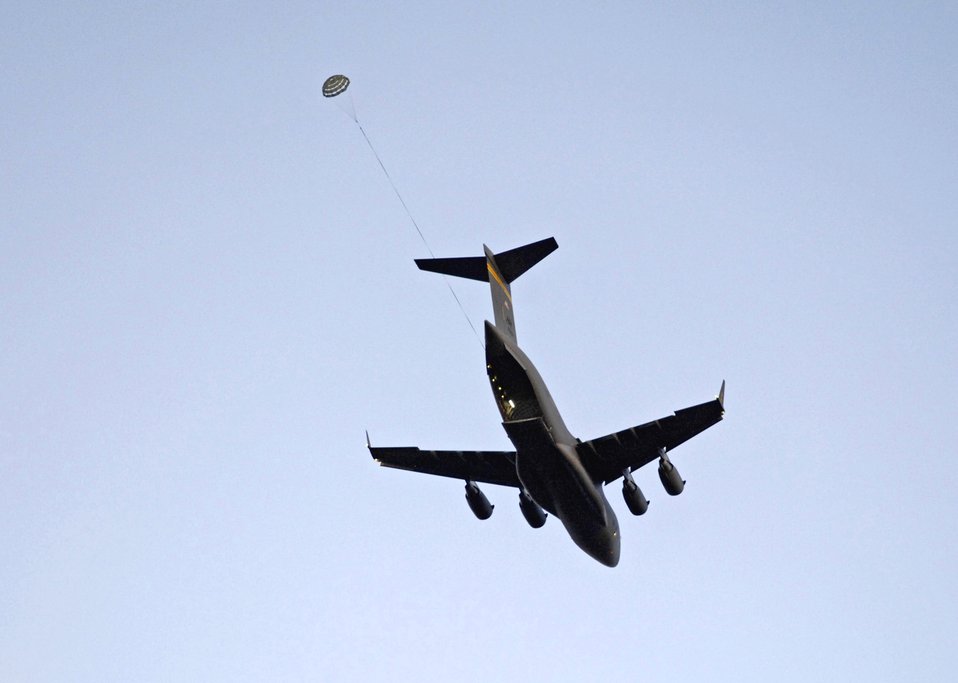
Load 'em up, drop 'em out

During an airdrop qualification, a practice bundle is dropped from a C-17 Globemaster III June 11 at the Kahuku Training Range in Hawaii. The C-17s are from the 535th Airlift Squadron at Hickam Air Force Base, Hawaii.